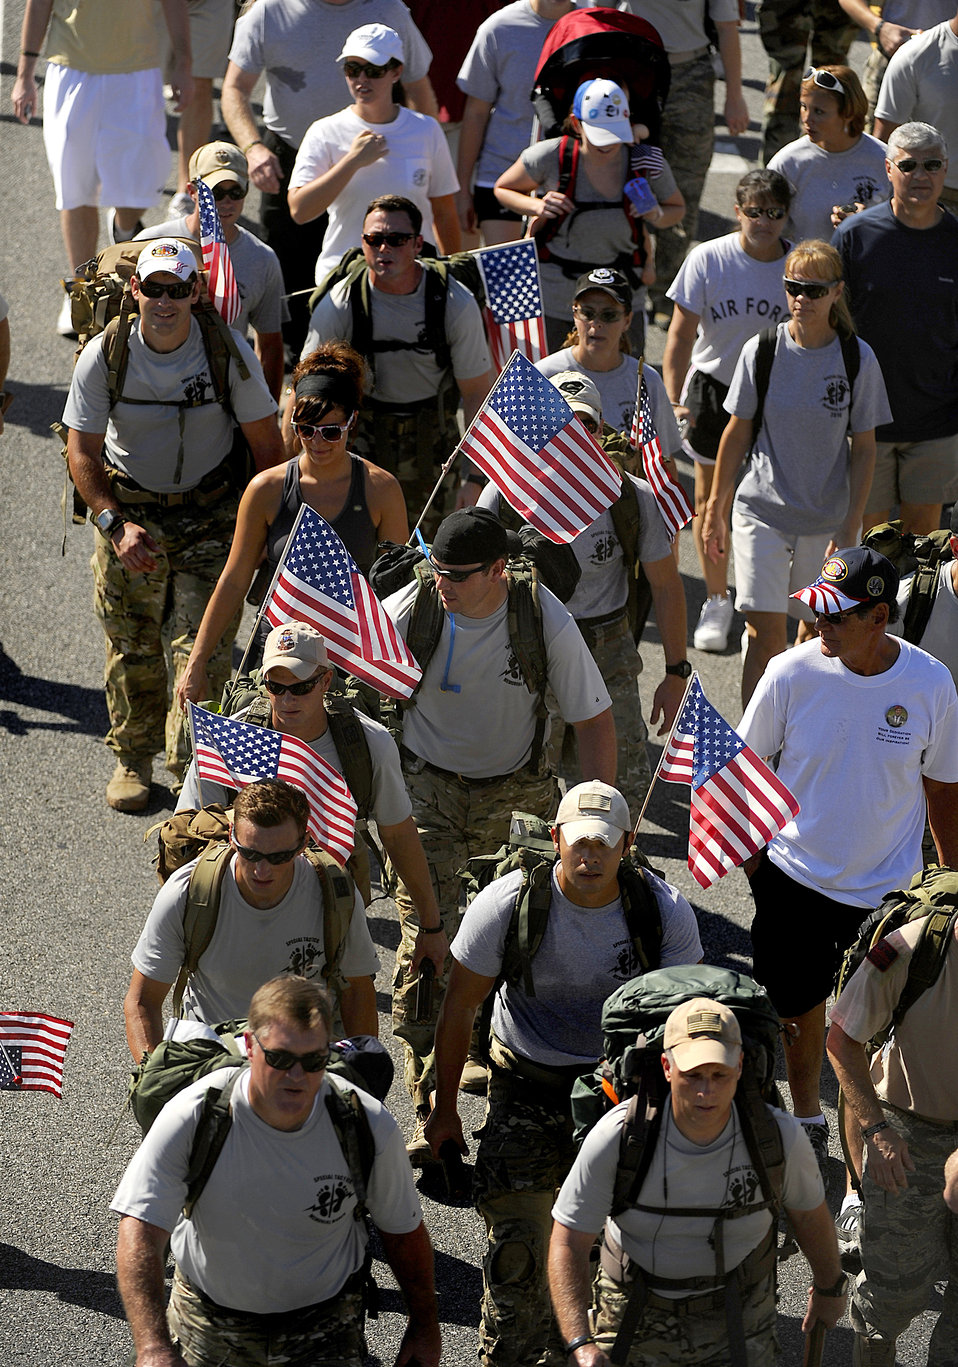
Special Tactics Memorial March

Surviving family members, a few wounded Airmen and members of the Air Force Special Operations Command, join fifteen Special Tactics Airmen Oct. 21, 2010, on the final stretch of an 860-mile memorial march from Lackland Air Force Base, Texas, to Hurlburt Field, Fla.